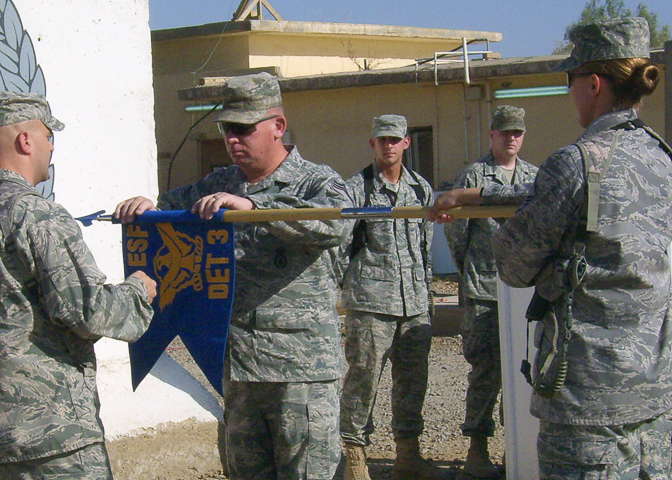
Airmen shut down 732nd ESFS Det. 3

Chief Master Sgt. Tim Ryan rolls up the 732nd Expeditionary Security Forces Squadron Det. 3's flag during the inactivation ceremony July 3, 2010, at Camp Taji, Iraq. Det. 3 has had security forces Airmen rotate yearly, training Iraqi police in the Baghdad area since 2006, as a police transition team to help put civil law and order in the hands of civil authorities, as opposed to having the Iraqi army in Baghdad. Sergeant Ryan is the superintendent of the 732nd ESFS Det. 3.